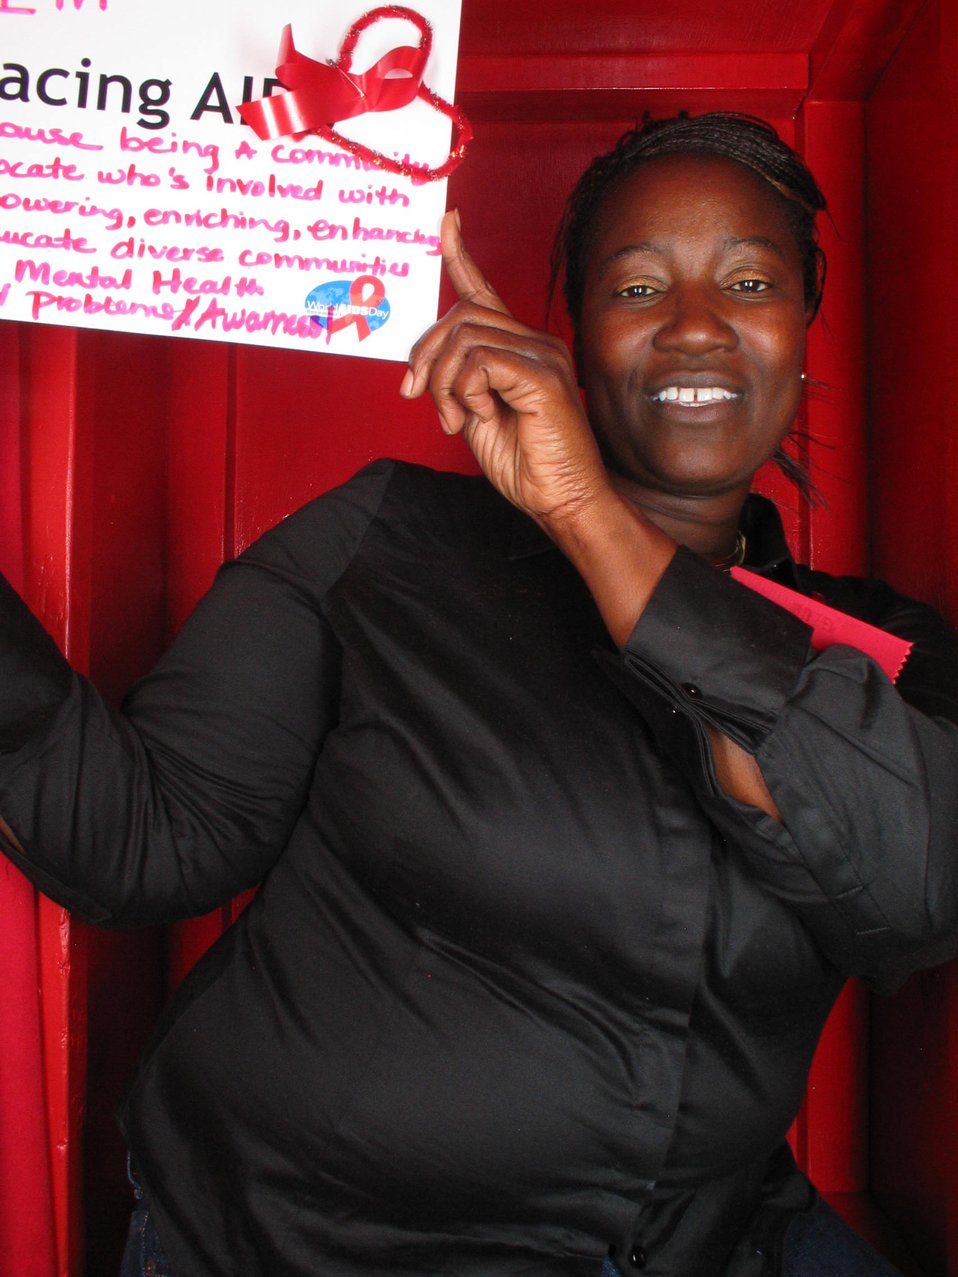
Facing AIDS